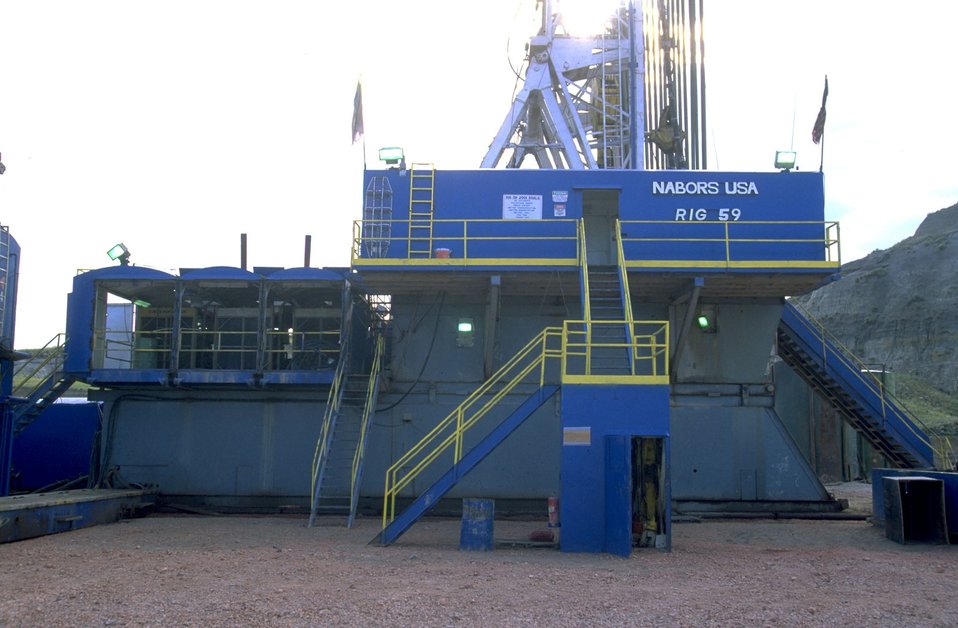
Closeup of oil drilling rig